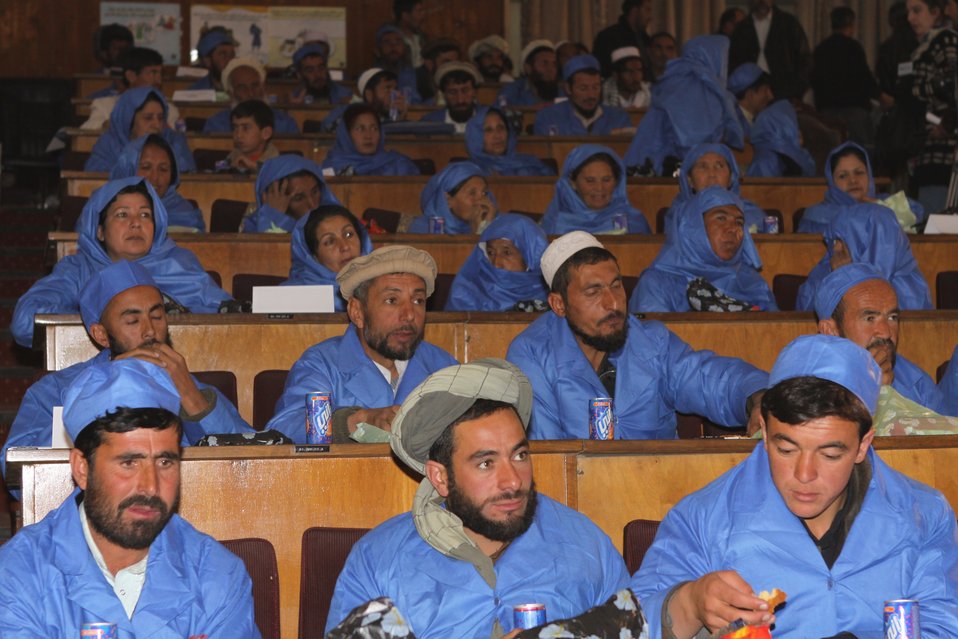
Community Health Workers Celebrated

Kabul, Afghanistan | December 5, 2010 — In support of the United Nations designated International Volunteer Day for Economic and Social Development, Afghanistan’s Ministry of Public Health celebrated its annual Community Health Worker Day today. Acting Minister of Public Health Dr. Suraya Dalil, USAID Senior Deputy Mission Director Robert Hellyer, other government officials, and international donors joined in recognizing the critical contribution of community health workers in Afghanistan and encouraging them to continue their voluntary support to their communities.
The event praised the contributions of the more than 22,000 volunteers throughout the country who deliver community level health-education, counseling, and services out of village health posts located in private homes. The Ministry of Public Health envisioned that community-based healthcare programs will actively encourage communities and families to adopt healthy lifestyles and behaviors, and provide families access to high quality and socially acceptable preventative medicine and life-saving services.
“We have 22,000 community health workers in Afghanistan that are able to implement the basic and standard medicines. They all have been trained through a job description,” said Minister Dalil. Addressing the health workers, she added, “I am proud and feel powerful that I have people like you.”
USAID-funded health projects collaborate closely with the Ministry of Public Health to improve the health and nutritional status of Afghans, provide quality primary healthcare, and promote healthy behaviors at the community and household-levels. USAID supported the training of more than 9,000 of the volunteer community health workers currently working in Afghanistan.
“On behalf of the American people, I congratulate the Community Health Workers for their diligence to gain the skills and knowledge necessary to serve their communities in this important role,” said USAID Senior Deputy Mission Director Hellyer. “USAID strongly supports community based health care and believes that quality community-based health services are essential to reaching Afghanistan’s Millennium Development Goals.”
To support the Basic Package of Health Services, USAID assisted in developing the community health worker training manual, helped train community health worker supervisors and master-trainers, facilitated in-service training, and produced and developed reporting tools, job aids, and education materials.